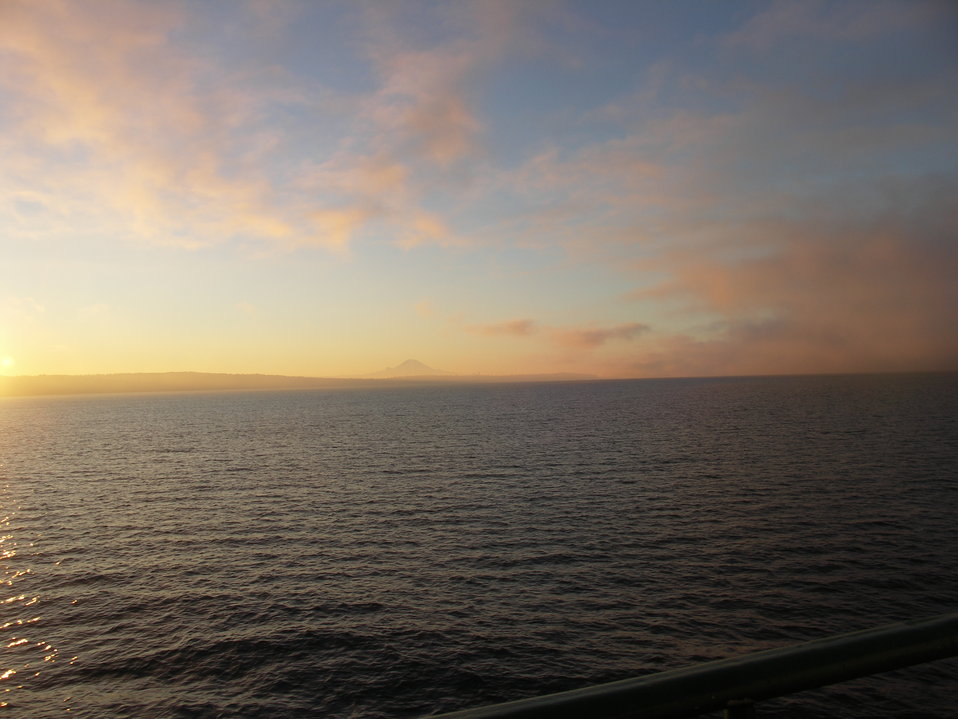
Mount Rainier Sunrise

Looking south toward Mount Rainier at sunrise from the Edmonds-Kingston ferry as it crosses central Puget Sound.

Learn more about the Puget Sound Ecosystem

Learn more about EPA